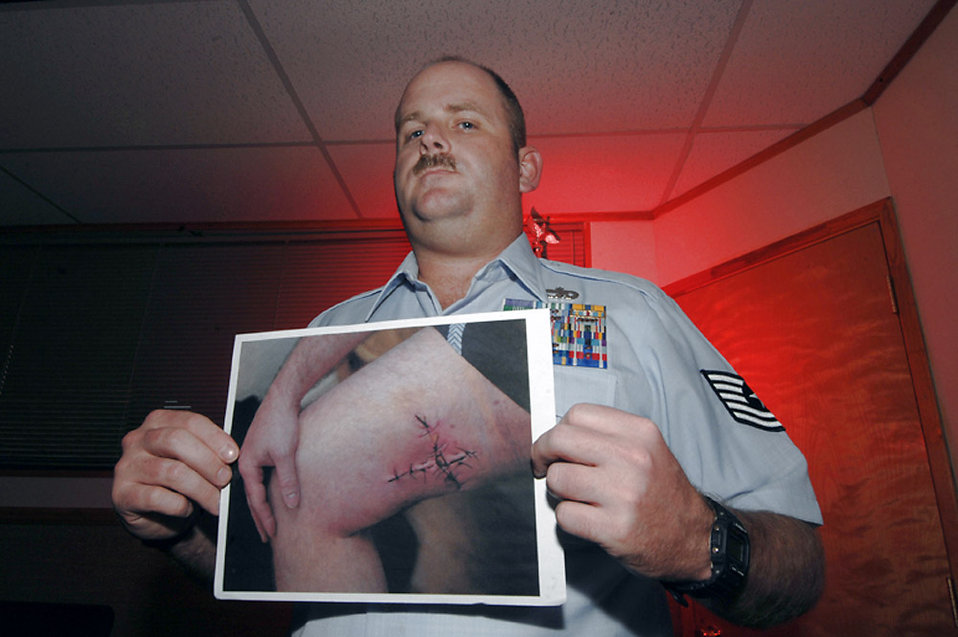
Purple Heart recipient ready to get into the fight after injury

Tech. Sgt. Jerome Baker shows a photo taken after his first surgery in Baghdad, Iraq. He is the 56th Logistics Readiness training NCO at Luke Air Force Base, Ariz.